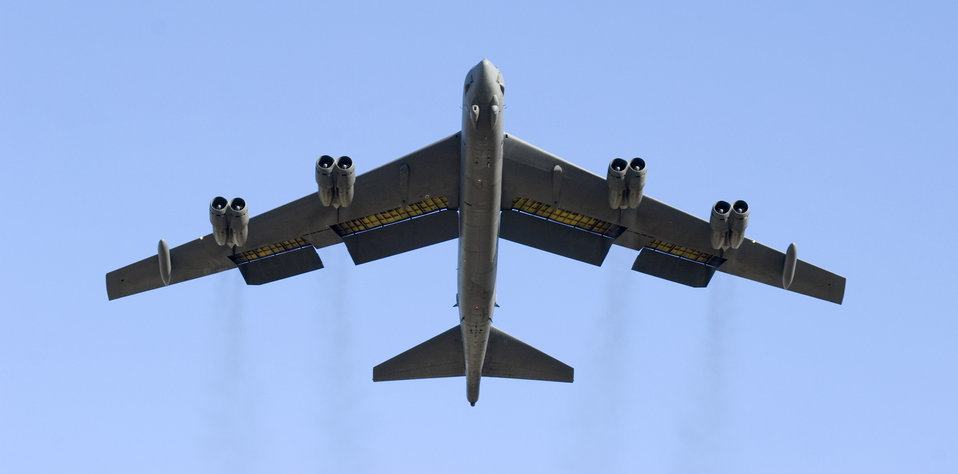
B-52 operations

A B-52 Stratofortress takes off from Minot Air Force Base, N.D., Aug. 21. The bomber from the 5th Bomb Wing conducted a training mission in the skies over North Dakota.